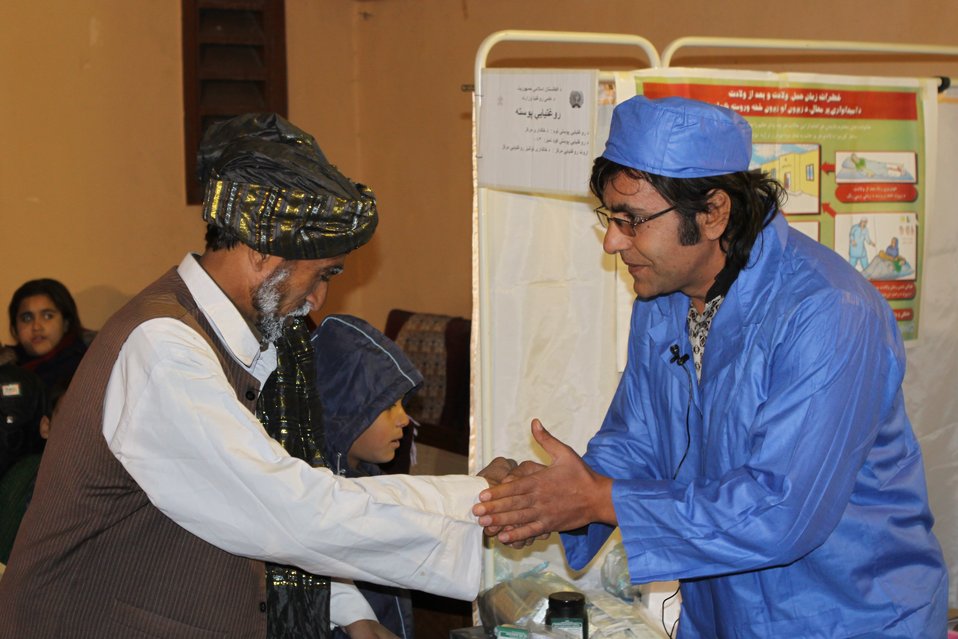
Community Health Workers Celebrated

Kabul, Afghanistan | December 5, 2010 — In support of the United Nations designated International Volunteer Day for Economic and Social Development, Afghanistan’s Ministry of Public Health celebrated its annual Community Health Worker Day today. Acting Minister of Public Health Dr. Suraya Dalil, USAID Senior Deputy Mission Director Robert Hellyer, other government officials, and international donors joined in recognizing the critical contribution of community health workers in Afghanistan and encouraging them to continue their voluntary support to their communities.
The event praised the contributions of the more than 22,000 volunteers throughout the country who deliver community level health-education, counseling, and services out of village health posts located in private homes. The Ministry of Public Health envisioned that community-based healthcare programs will actively encourage communities and families to adopt healthy lifestyles and behaviors, and provide families access to high quality and socially acceptable preventative medicine and life-saving services.
“We have 22,000 community health workers in Afghanistan that are able to implement the basic and standard medicines. They all have been trained through a job description,” said Minister Dalil. Addressing the health workers, she added, “I am proud and feel powerful that I have people like you.”
USAID-funded health projects collaborate closely with the Ministry of Public Health to improve the health and nutritional status of Afghans, provide quality primary healthcare, and promote healthy behaviors at the community and household-levels. USAID supported the training of more than 9,000 of the volunteer community health workers currently working in Afghanistan.
“On behalf of the American people, I congratulate the Community Health Workers for their diligence to gain the skills and knowledge necessary to serve their communities in this important role,” said USAID Senior Deputy Mission Director Hellyer. “USAID strongly supports community based health care and believes that quality community-based health services are essential to reaching Afghanistan’s Millennium Development Goals.”
To support the Basic Package of Health Services, USAID assisted in developing the community health worker training manual, helped train community health worker supervisors and master-trainers, facilitated in-service training, and produced and developed reporting tools, job aids, and education materials.